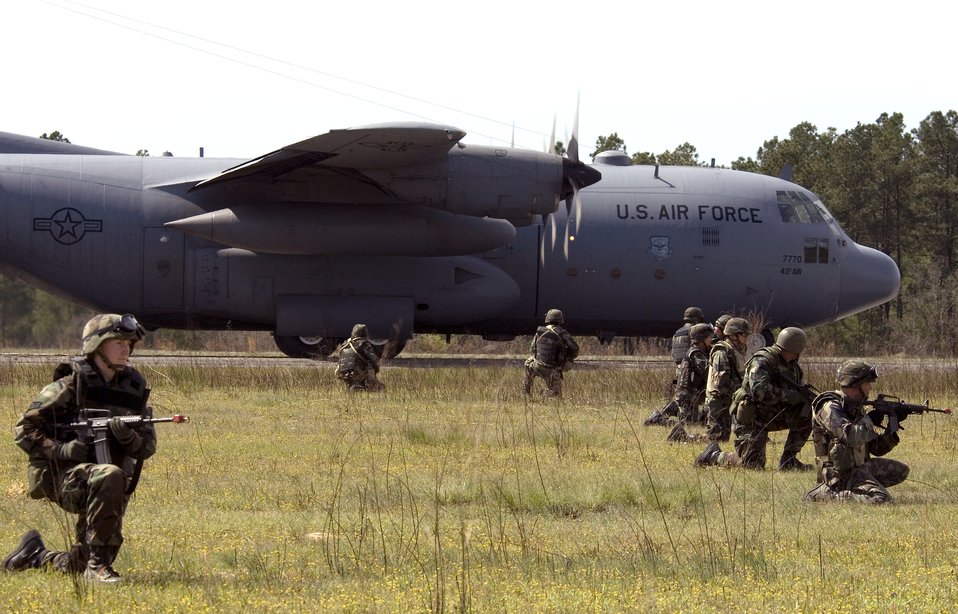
Airmen train for air evac

Members of the 43rd Air Evacuation Squadron at Pope Air Force Base, N.C., provide security for a C-130 Hercules evacuating patients during annual medical field training at Fort Bragg, N.C., on Thursday, April 6, 2006. The 43rd is conducting annual medical field training to prepare squadron members for real world deployments.